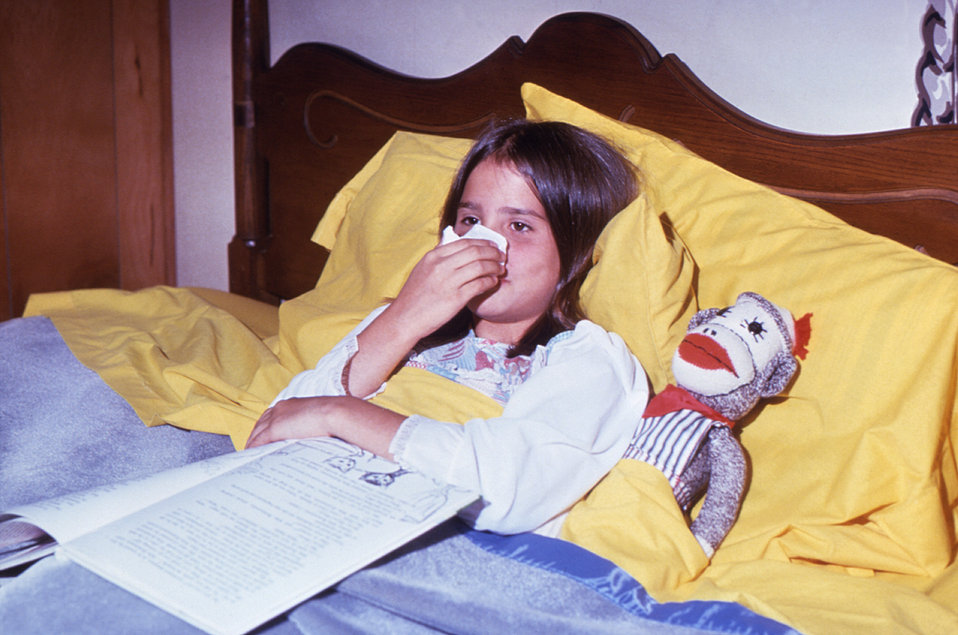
This child is suffering from nasal congestion, one of the symptoms caused by the common cold virus.